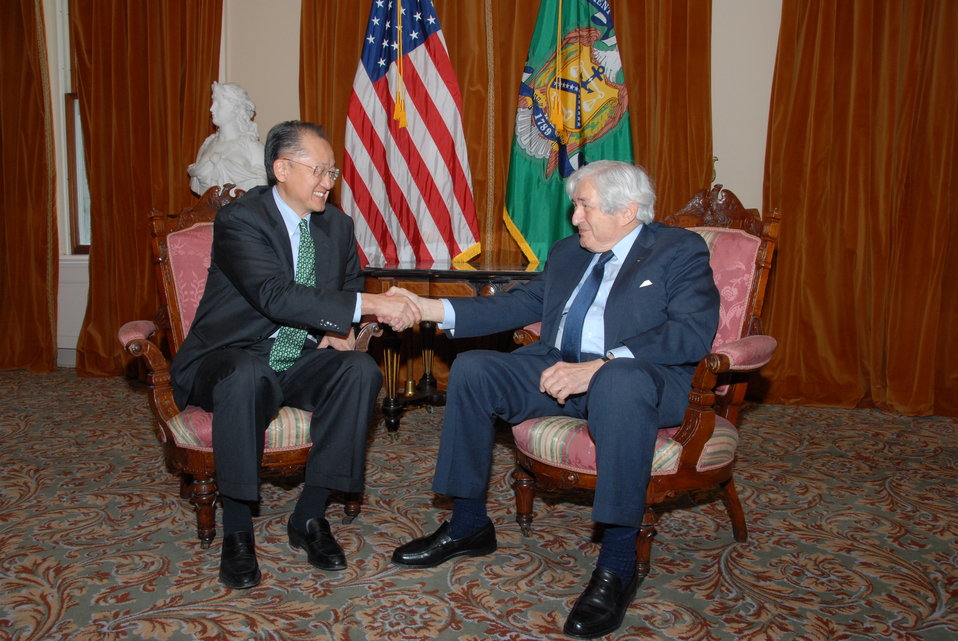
Dr. Jim Yong Kim meeting with former World Bank President James Wolfensohn

On March 27, 2012, Dr. Jim Yong Kim, nominated by President Barack Obama to be President of the World Bank, met with former World Bank President James Wolfensohn at the Treasury Department.